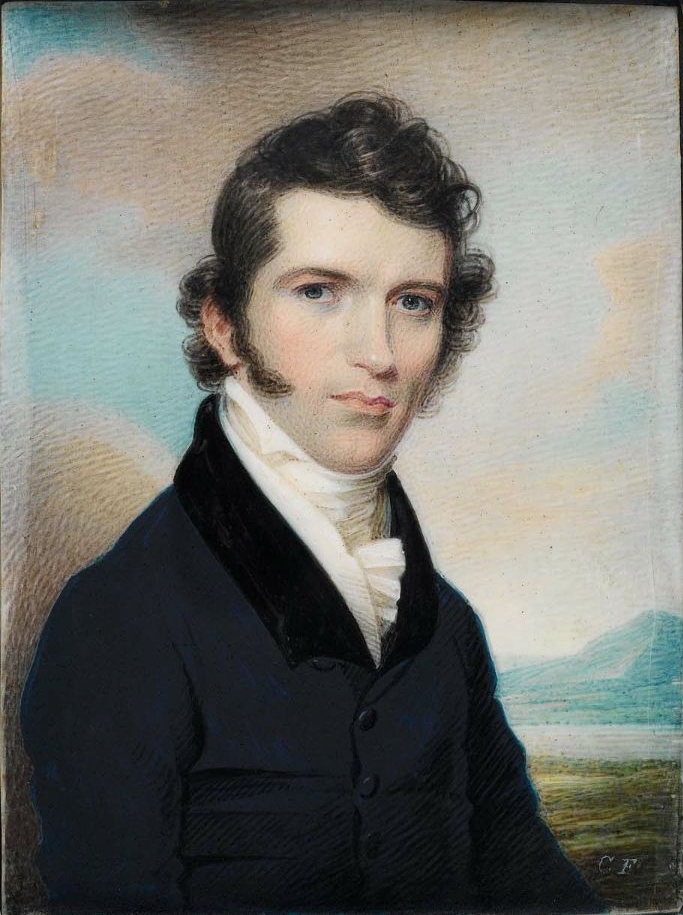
Alvan Fisher - Portrait of the American painter Charles Fraser